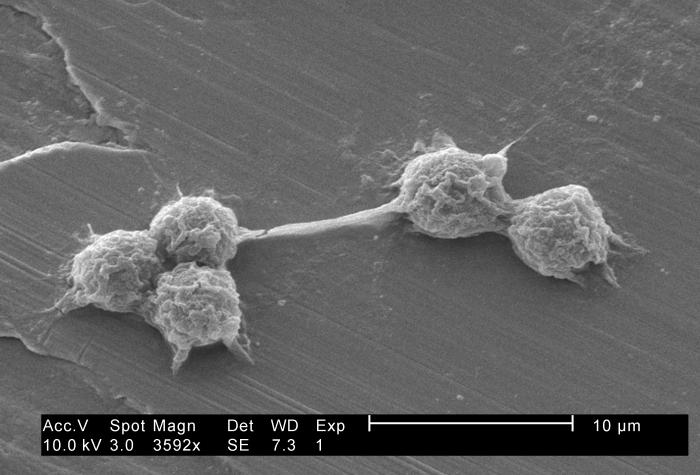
Under a moderately-high magnification of 3592X, this 2002 scanning electron micrograph (SEM) revealed some of the ultrastructural morphology exhibited by five Hartmannella vermiformis amoebae trophozoites.